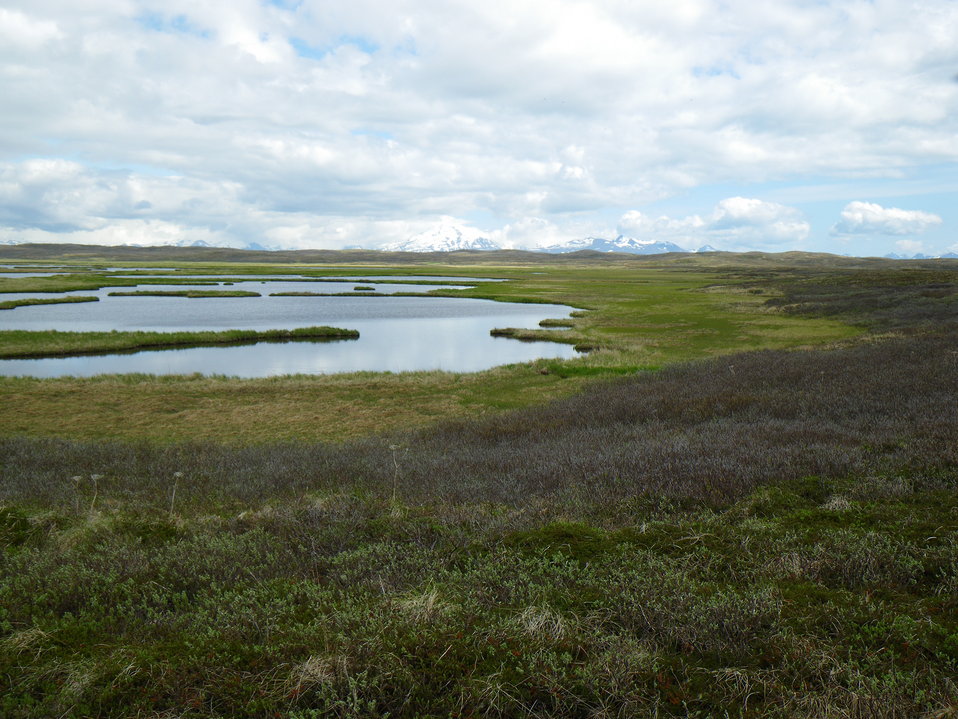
Lakes near Outer Marker

Izembek National Wildlife Refuge